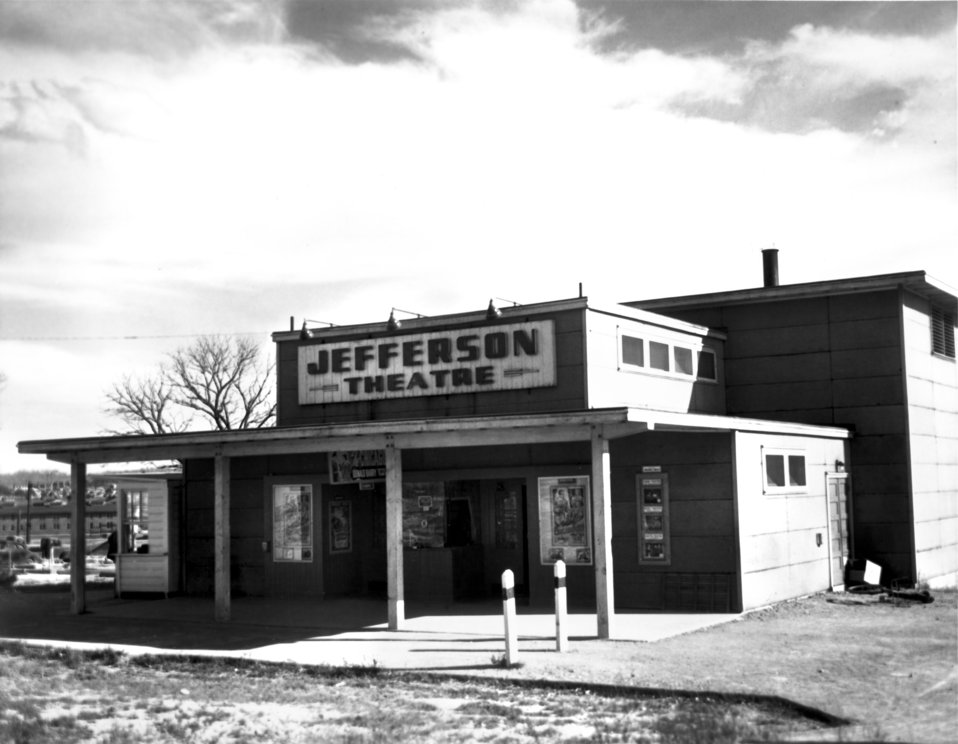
Jefferson Theater Oak Ridge

1180 Ed Westcott 1949
Jefferson Theater Oak Ridge Tennessee